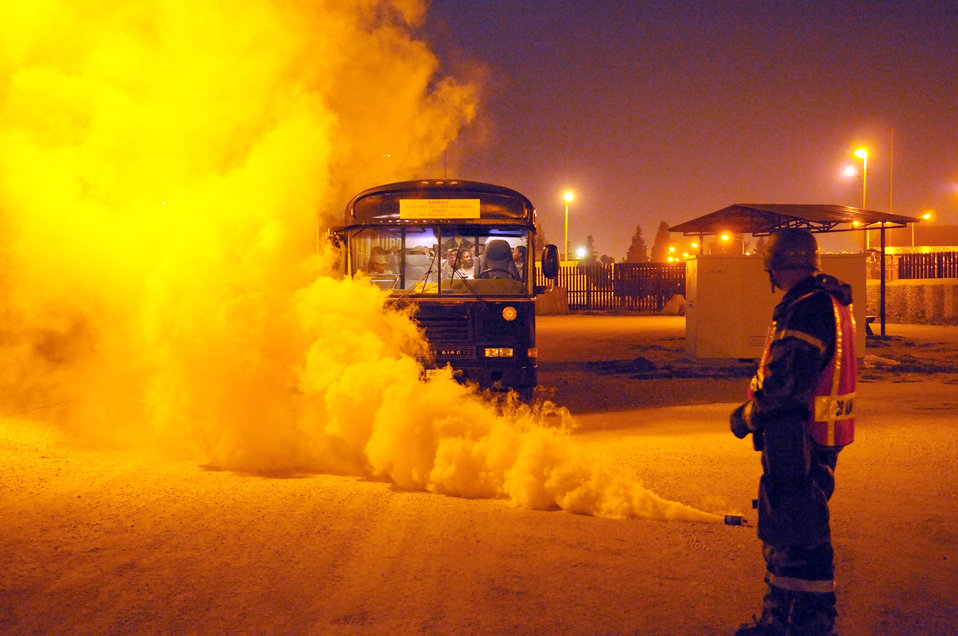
Incirlik's anti-terrorism exercise

Airman 1st Class Daniel Coronado participates in an anti-terrorism exercise May 25, 2010, at Freedom Park fitness center in Incirlik Air Base, Turkey. Airman Coronado is with the 39th Security Forces Squadron.